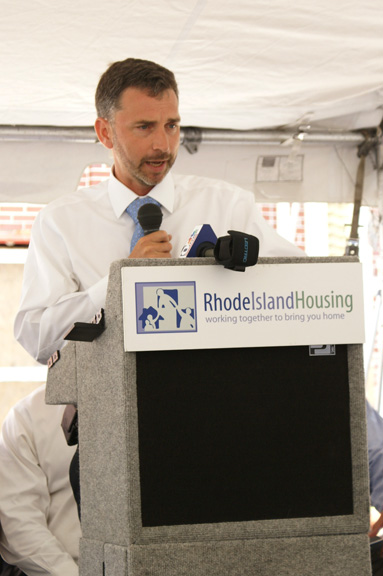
RI Ground Breaking 6/28/10

Assistant Secretary for Management Dan Tangherlini speaking at ground breaking to kickoff construction of Rhode Island’s first-of-its-kind development to support Rhode Islanders who are returning to the community after incarceration.